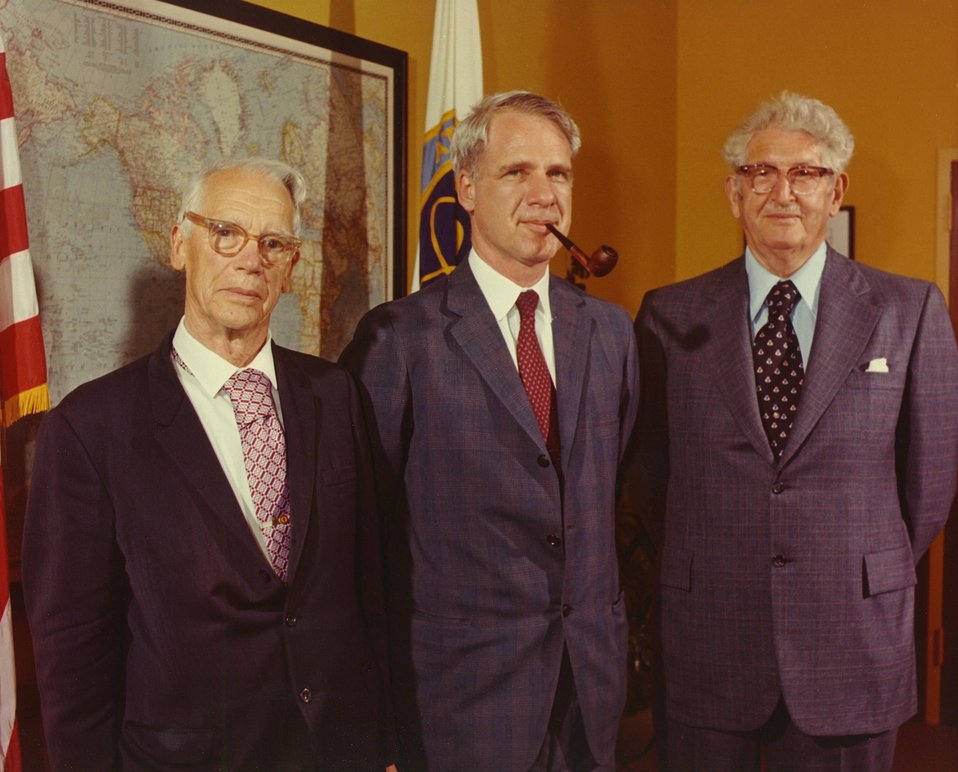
James Schlesinger with Shields Warren and Stafford L. Warren. 1971.